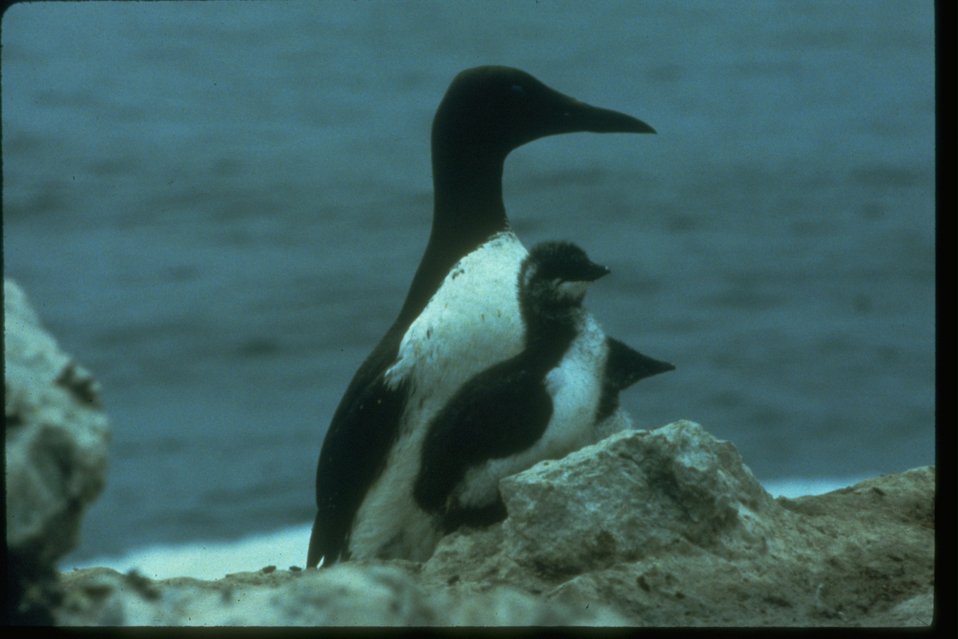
Common Murre with chick. Near the Yaquina Head lighthouse.